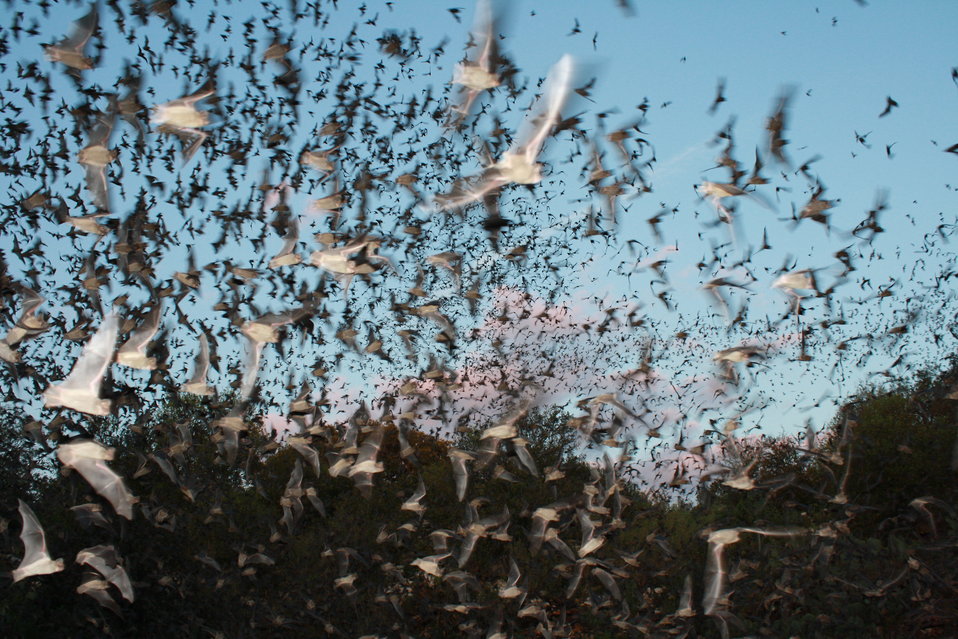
Mexican free-tailed bats exiting Bracken Bat Cave